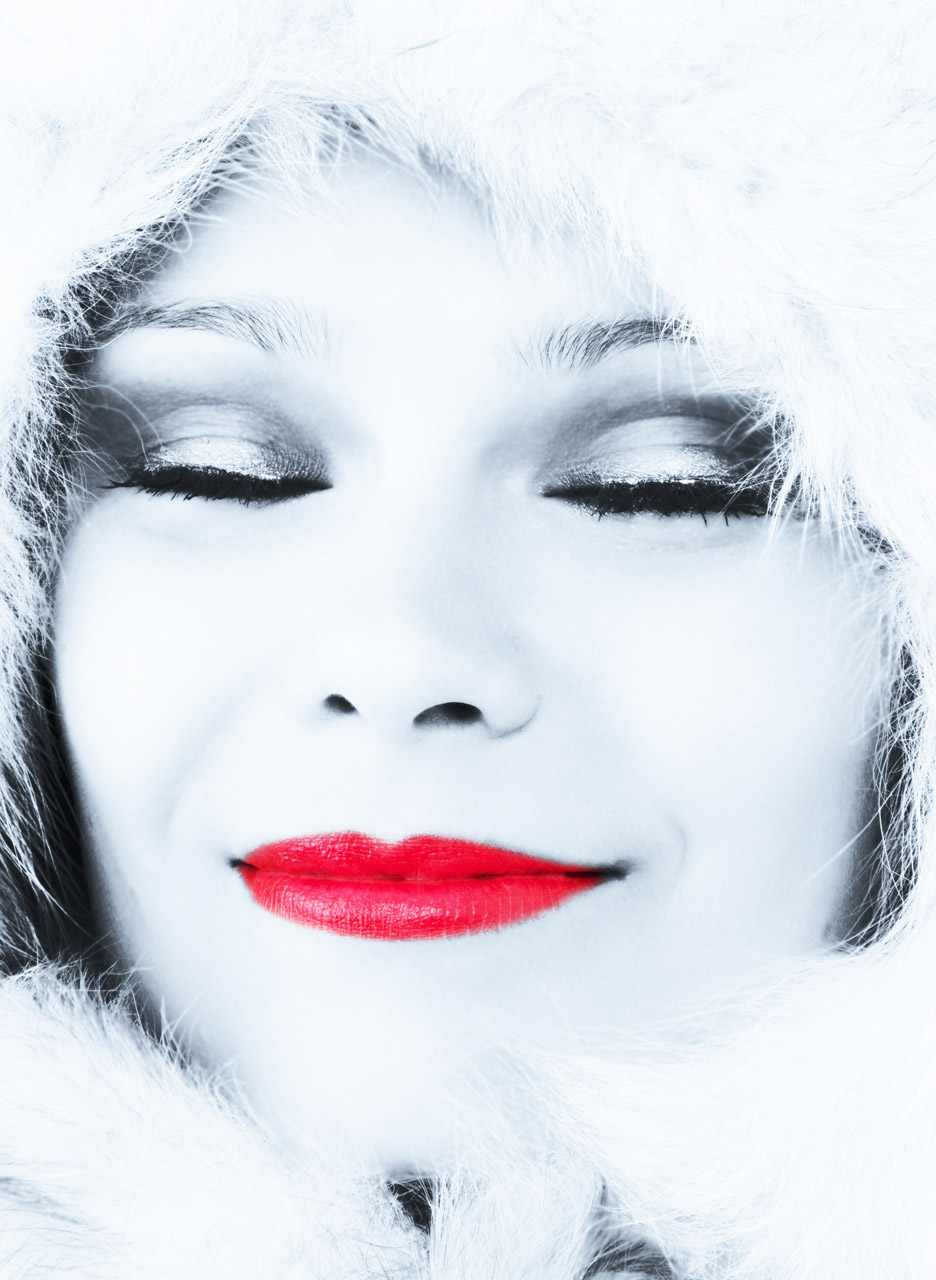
Winter lady

Young winter lady dreaming in blue - jana svojsova.